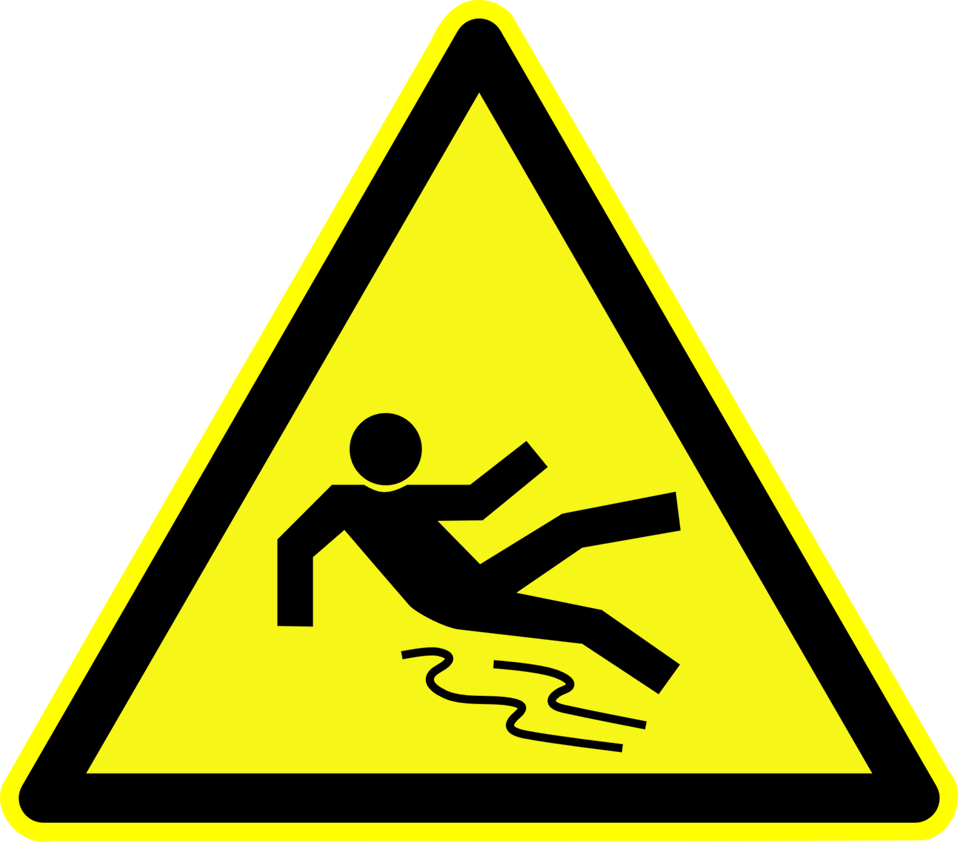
Deutsch: Warnung vor Rutschgefahr, Warnzeichen D-W028 nach DIN 4844-2